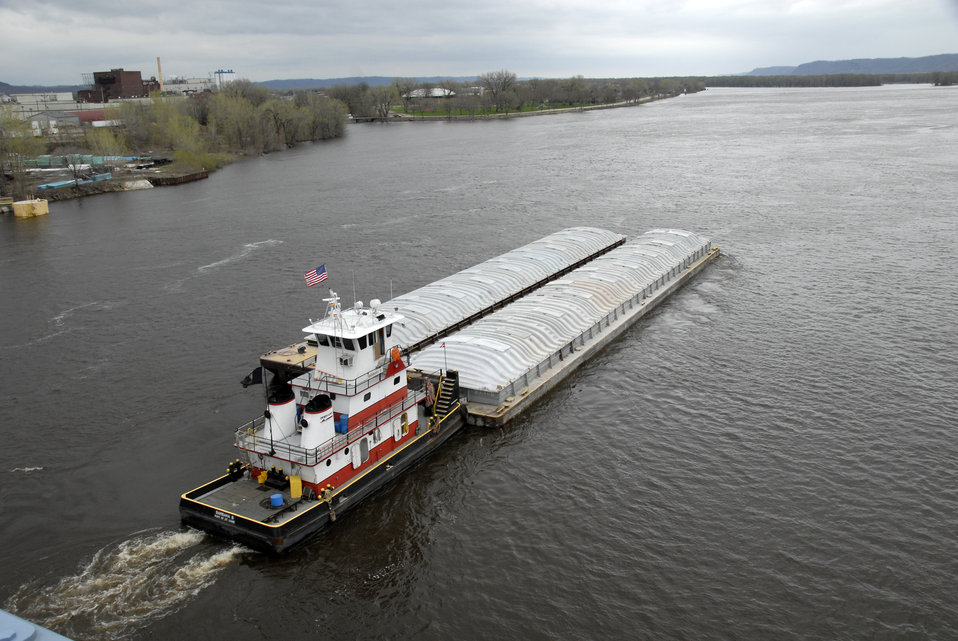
A tugboat pushes grain barges down the Mississippi River in La Crosse, Wisconsin on April 25, 2008. The U.S. Department of Agriculture’s (USDA) Natural Resource Conservation Service (NRCS) has various programs to assist farmers and ranchers in implementing and maintaining conservation practices that will enable them to have more sustainable and profitable farms and ranches.